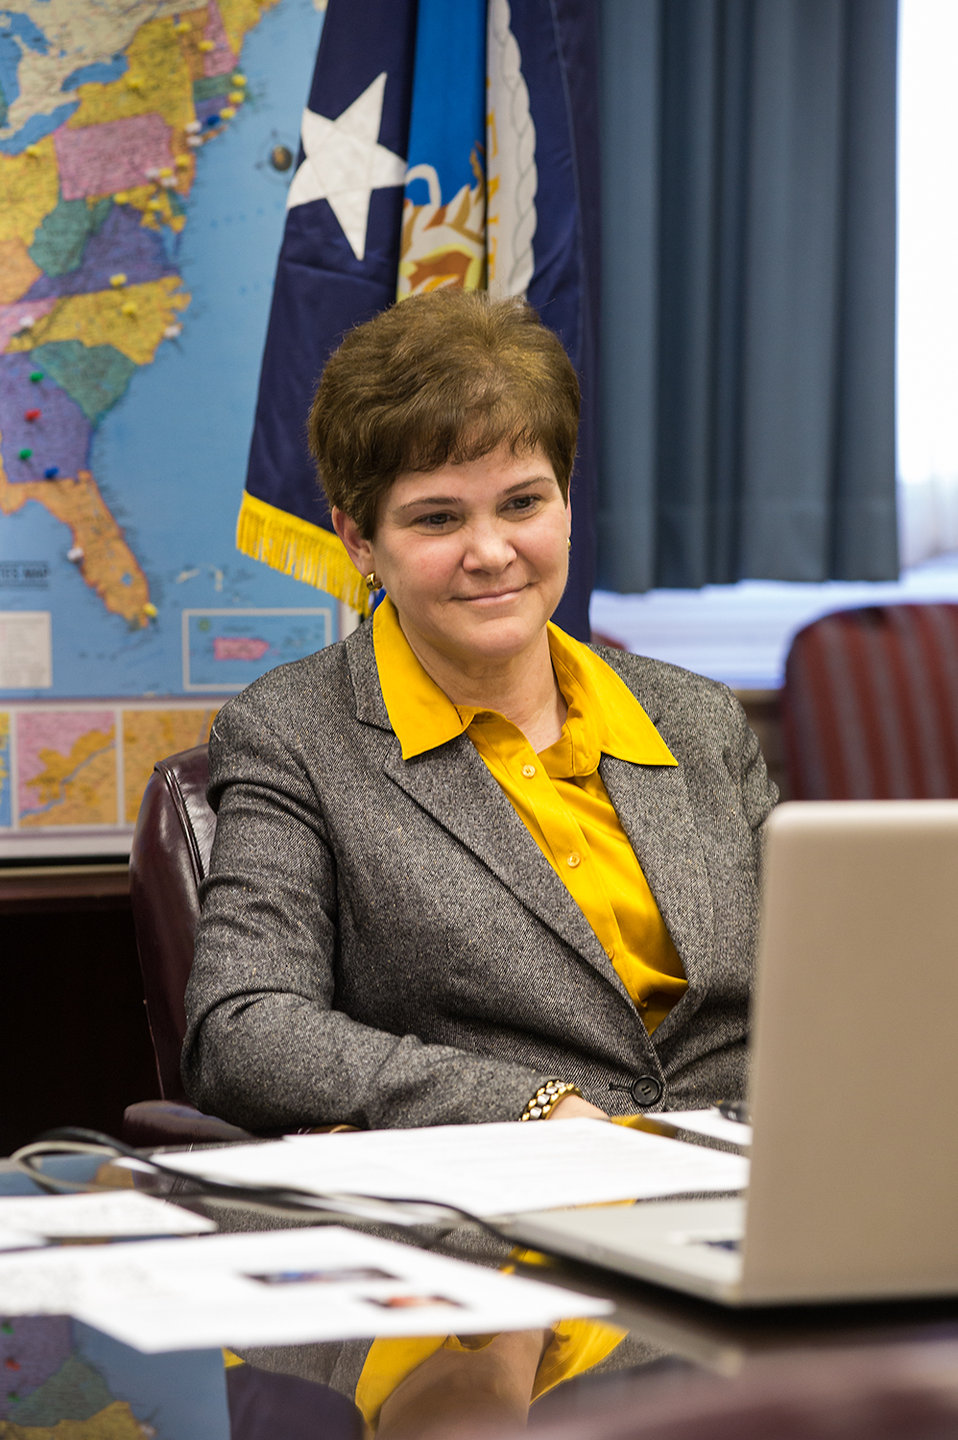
Agriculture Deputy Secretary Krysta Harden listens to questions posed by Aledo IL corn and soybean farmer Kate Danner and Forest Grove, OR Mujere, farmers Alejandro Tecum, and Adelante at a Goggle Hangout on the U.S. Department of Agriculture’s (USDA)commitment to new farmers to build the new generation of agriculture in Washington, D.C. on Monday, Feb. 24, 2014. USDA Photo Bob Nichols